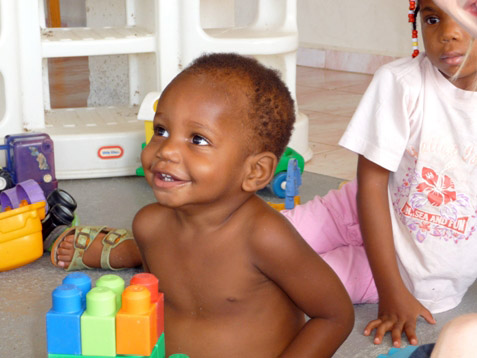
Airmen take time to help terminally ill children

A child smiles at Airmen during playtime Dec. 12 at the Siloam Children's Hospice in Curacao, Netherland Antilles. The home for orphaned, abandoned, abused and terminally ill children has captured the hearts of 429th Expeditionary Operations Squadron Airmen as they regularly volunteer to maintain the compound's grounds, paint, donate toys and their free time to provide a safe and comfortable environment for residents.